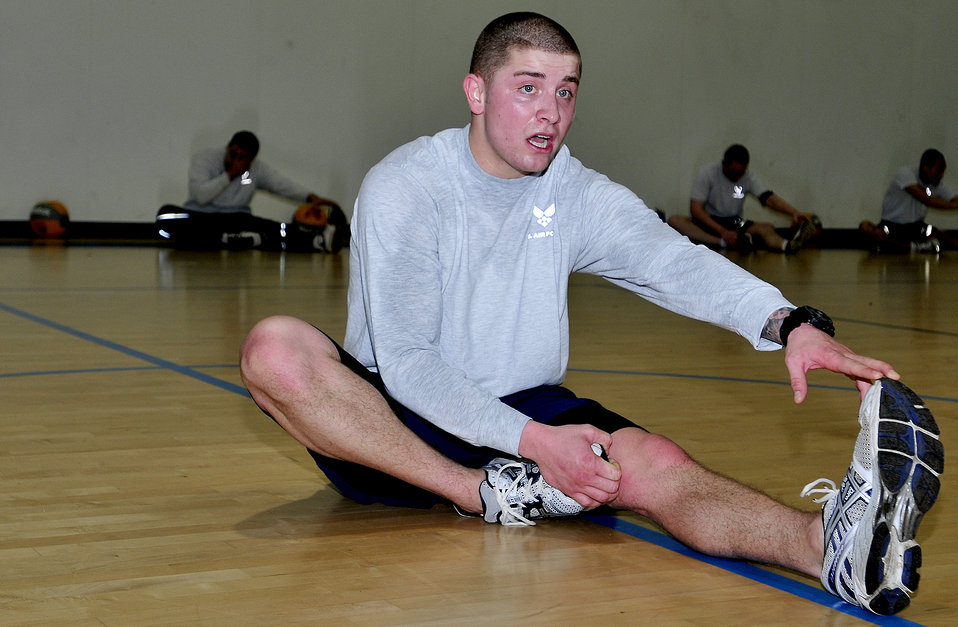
Working out

Senior Airman Steven Evans, the 48th Security Forces Squadron physical training leader, leads fellow 48th SFS members in a stretch during a cool down after their workout at Royal Air Force Lakenheath, England, Jan. 12, 2012. Since taking charge of the squadron's physical training program, the average pass rate has risen and the number of failures has decreased.